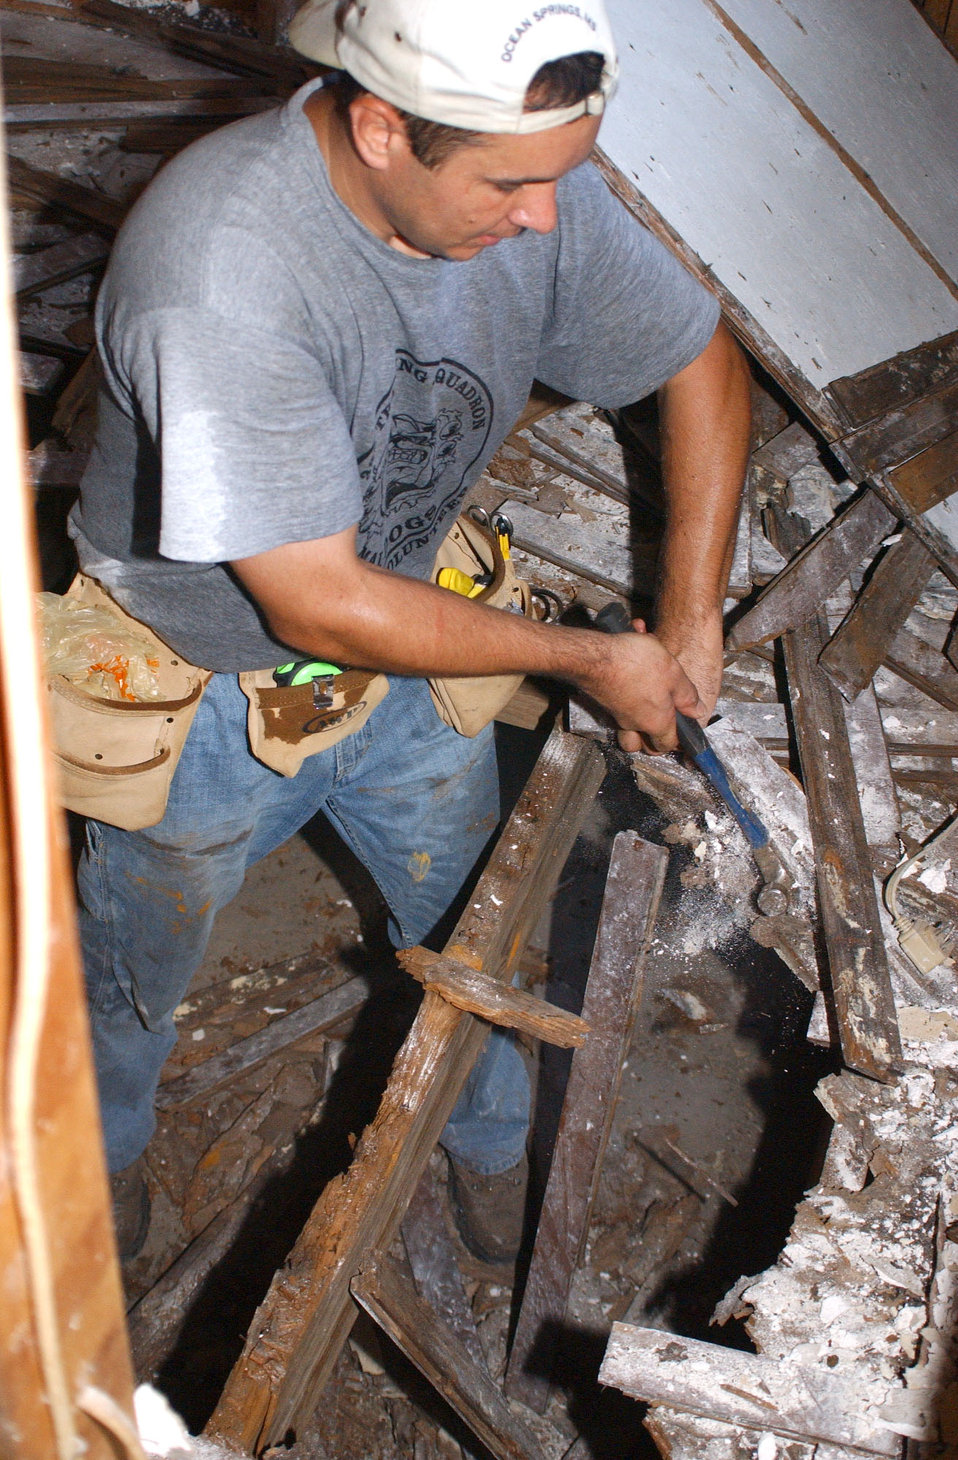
Keesler Air Force Base: One year after Katrina

Master Sgt. Dean Ross pulls up rotted flooring in the hurricane-damaged Biloxi home of Alice Schuler, whose late husband, David, was an Air Force veteran. The project is part of continuing humanitarian relief operations in communities surrounding Keesler Air Force Base, Miss., since Hurricane Katrina. Sergeant Ross is with the 332nd Training Squadron.